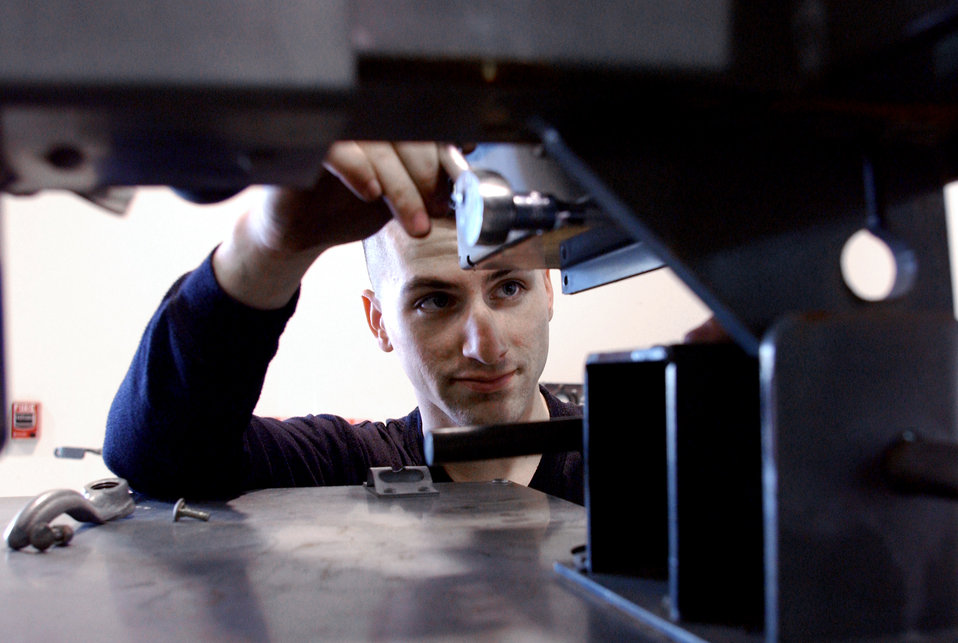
How many Airman does it take ....

INCIRLIK AIR BASE, Turkey -- Senior Airman Brandon Urban repairs a broken flood light here recently. Airman Urban is an aerospace ground equipment technician with the 39th Maintenance Squadron.